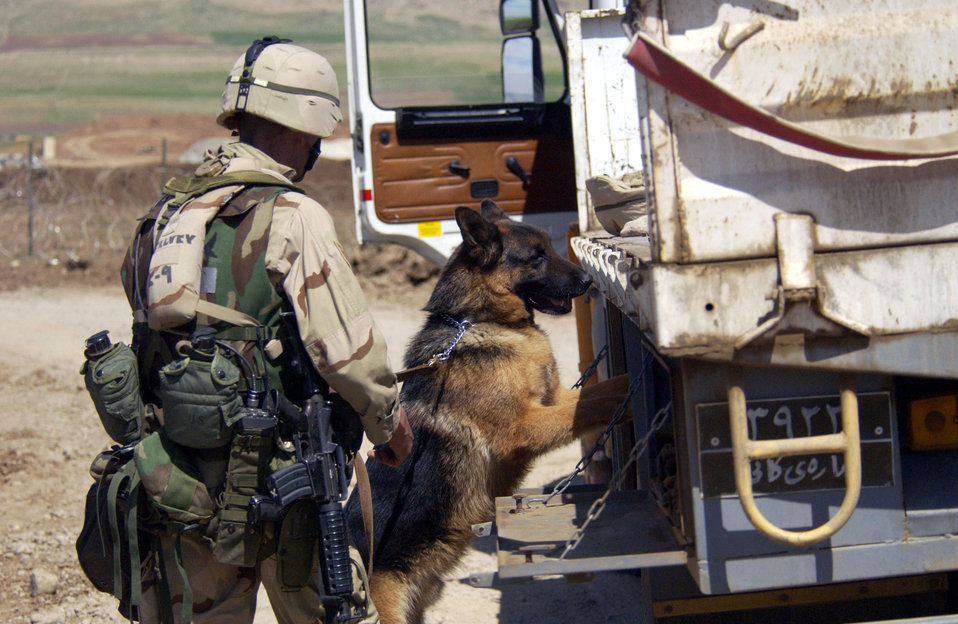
Search

OPERATION IRAQI FREEDOM -- Staff Sgt. Christopher Falvey and his military working dog Ricky, both security forces members assigned to the 86th Contingency Response Group, check a vehicle for explosives before entry onto Bashur Airfield in Kurdish controlled northern Iraq in support of Operation IRAQI FREEDOM on April 12.